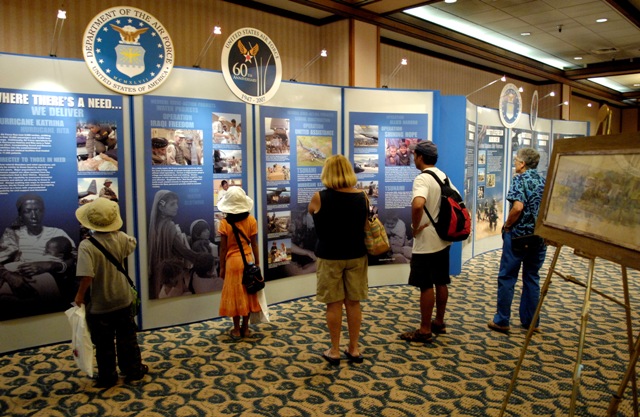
Showcasing heritage

People browse through the Air Force Art Collection exhibit Sept. 13, 2007 at the Hale Koa hotel in Waikiki, Honolulu, during Air Force Week Honolulu. The Pacific Air Forces Office of History hosted the event with over 50 works of art ranging from 1941 thru 2007.